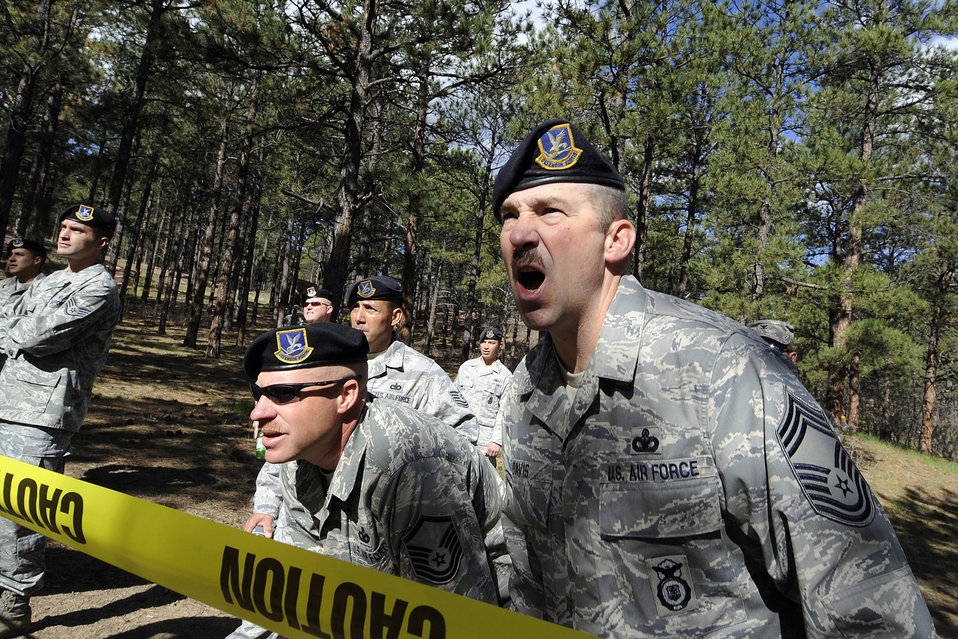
Security Forces Guardian Challenge

Master Sgt. Garrett Maynard (left foreground) and Chief Master Sgt. Tad Davis cheer on their team during the security forces competition at the U.S. Air Force Academy's obstacle course May 18, 2010, in Colorado Springs, Colo. They are assigned to the 50th Security Forces Squadron.